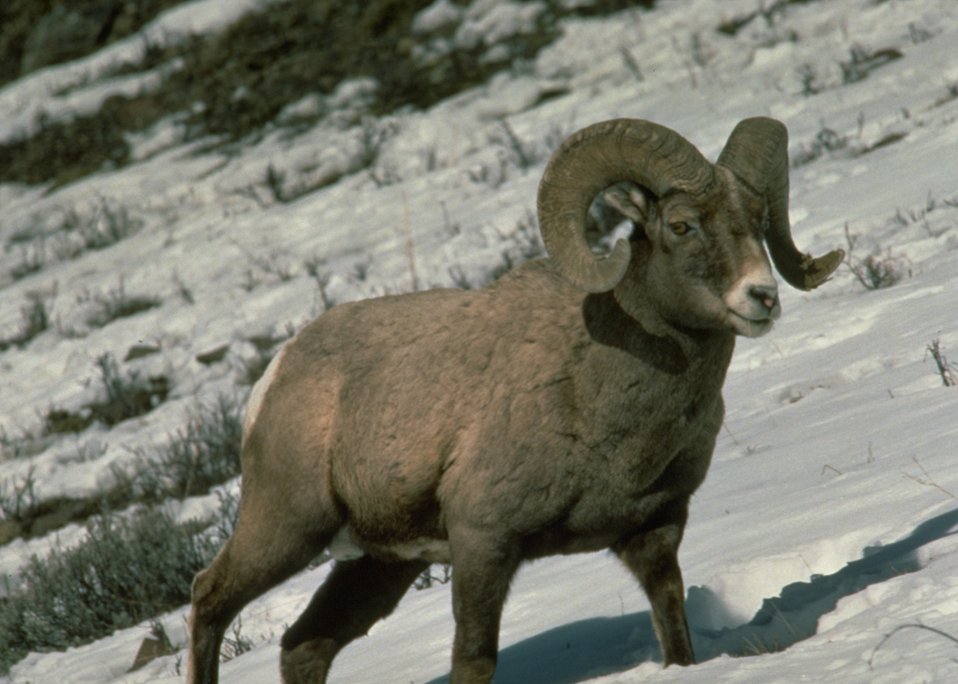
Big horn sheep on mountain site.